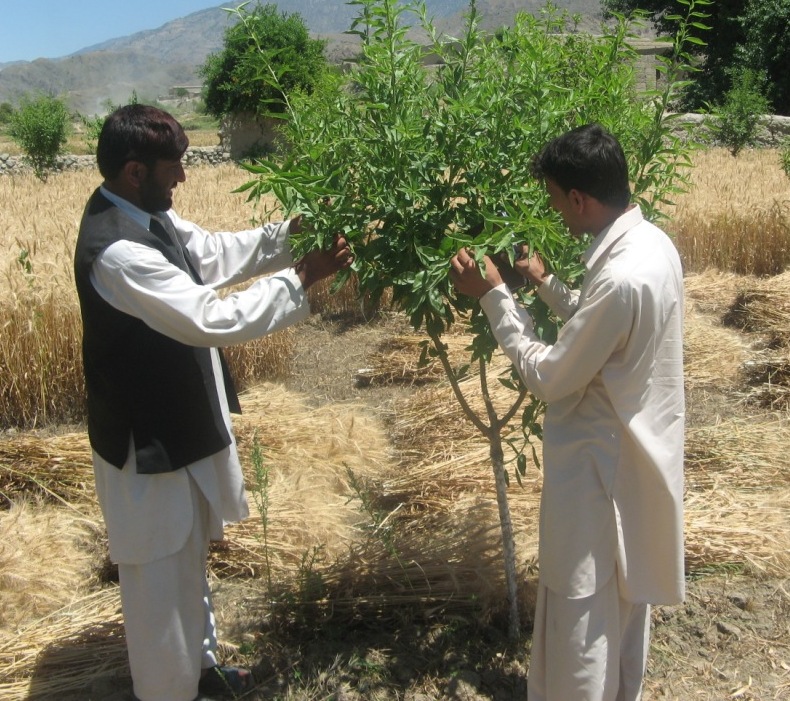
KU crop